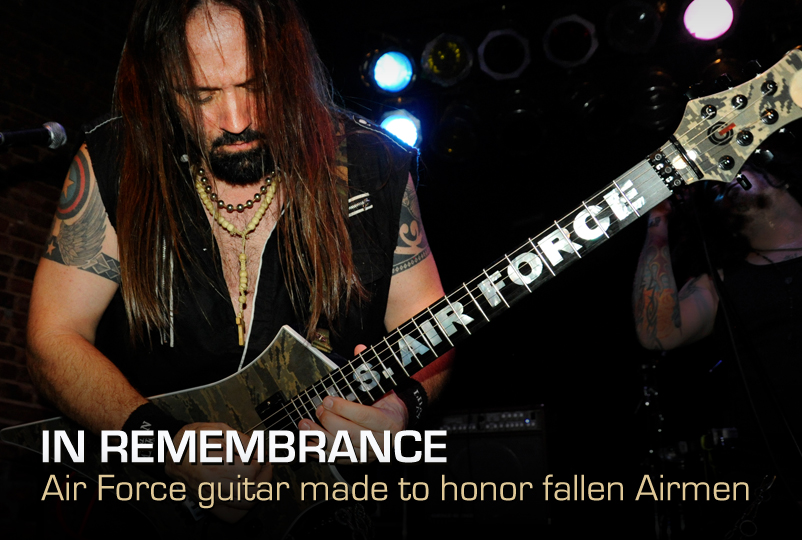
In Remembrance